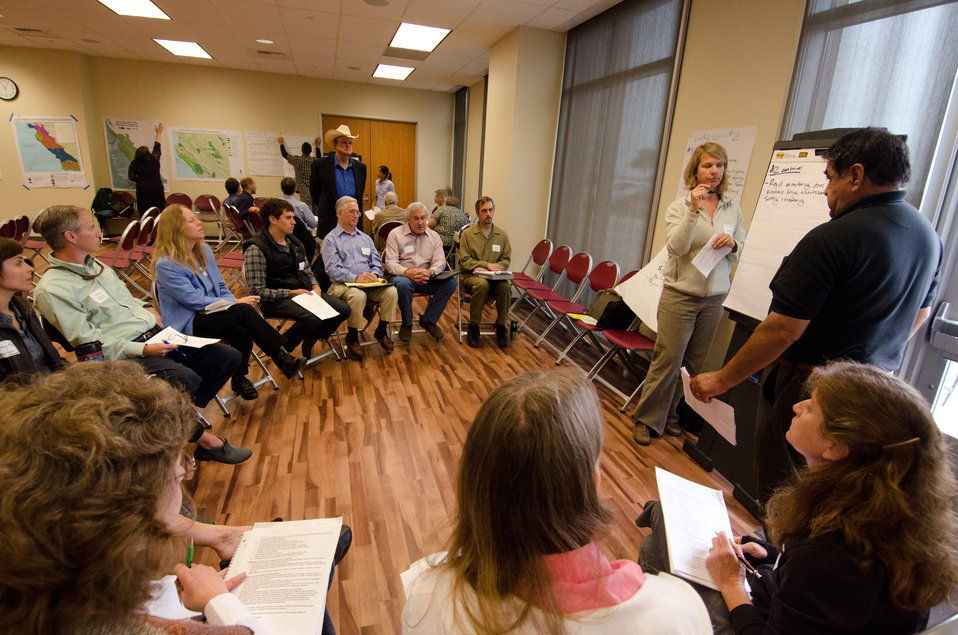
U.S. Department of Agriculture Natural Resources Conservation Service State Conservationist Ed Burton (wearing hat) observes and listens to what this group and facilitator Trinidad Juarez (standing, right) are discussing during the America’s Great Outdoors Initiative (AGO) Monterey Bay Pilot Area Focus Session in the City of Watsonville’s Civic Plaza in California, on Friday, June 17, 2011. Congressman Sam Farr, U.S. Department of Agriculture (USDA) Deputy Undersecretary for Natural Resources and Environment Ann Mills, USDA Natural Resources Conservation Service State Conservationist Ed Burton, National Oceanic and Atmospheric Administration Monterey Bay National Marine Sanctuary Superintendent Paul Michel, USDA Region 5 Deputy Regional Forester Ron Ketter and representatives of other Federal resource management agencies came together to identify partnership opportunities and determine actions for natural resource protection and enhancement that achieve water quality protection and publicize voluntary stewardship in the watersheds that drain into the Monterey Bay National Marine Sanctuary. This area includes the counties of San Mateo, Santa Cruz, Santa Clara, San Benito, Monterey, and San Luis Obispo. Key questions identified existing multi-county or multi land use partnerships; what is not being done; possible partnerships - collective resources to maximize the benefits to natural resources and communities; and additional resources that organizations can bring to maximize AGO. President Barack Obama signed the initiative on April 16, 2010 to develop a 21st Century conservation and recreation agenda.